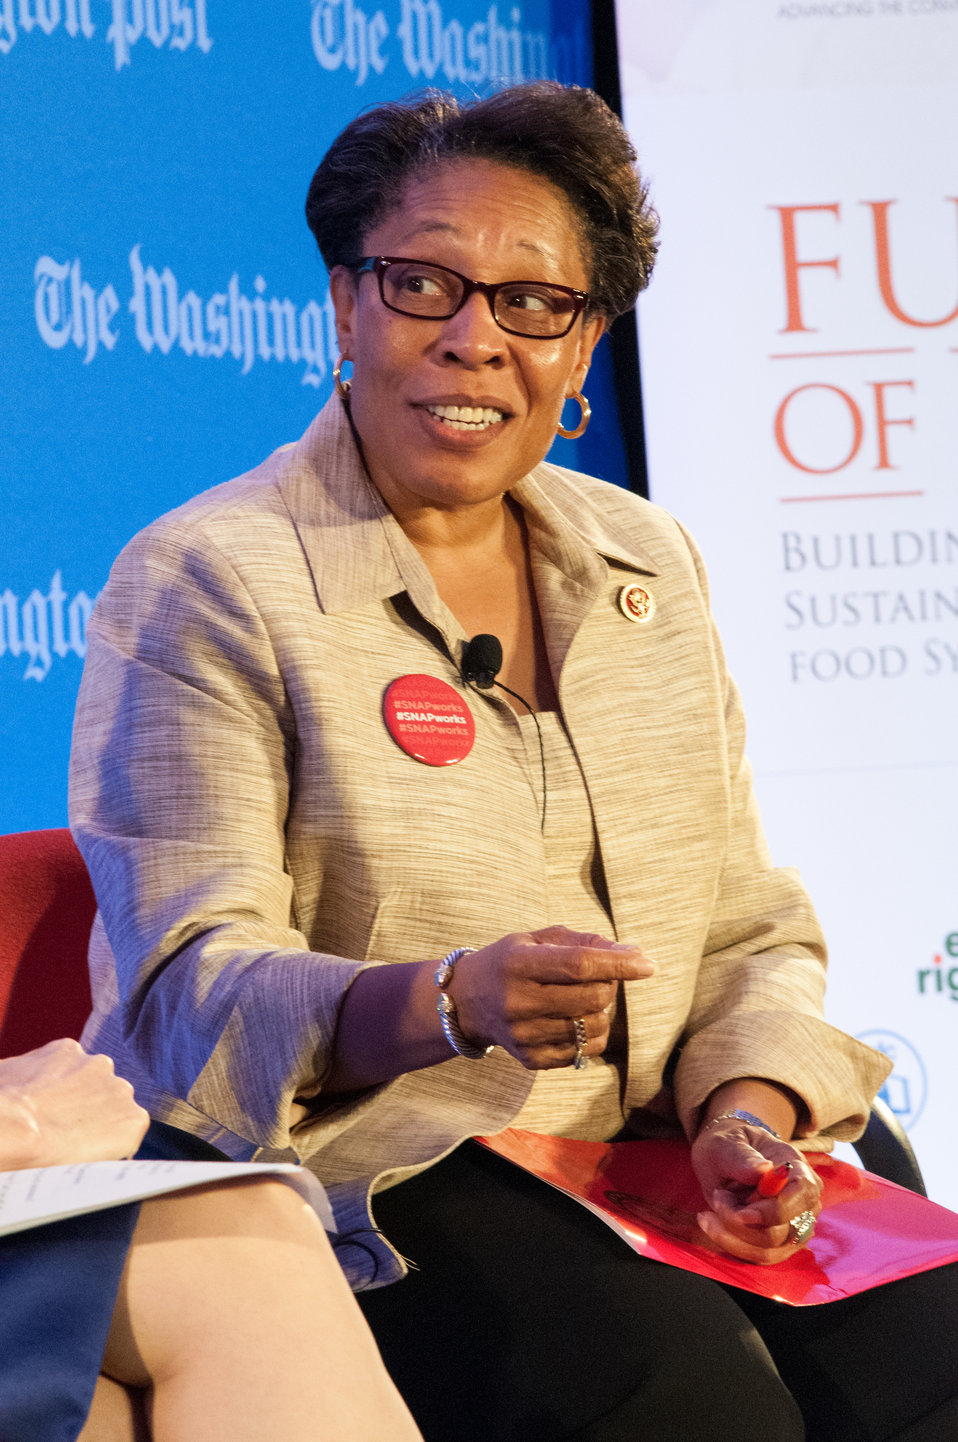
U.S. House of Representatives Committee on Agriculture member Congresswoman and an anti-hunger advocate Marcia Fudge (OH) along with Agriculture Secretary Tom Vilsack and leading agricultural and nutrition experts discuss expanding healthy, sustainable food systems during the annual live forum, “Future of Food: Building a Sustainable Food System 2013,” sponsored by the Washington Post in Washington, D.C. on Wednesday, May 22, 2013. The discussion included public-private partnerships, the market’s role in nutrition and the future of agricultural innovation.